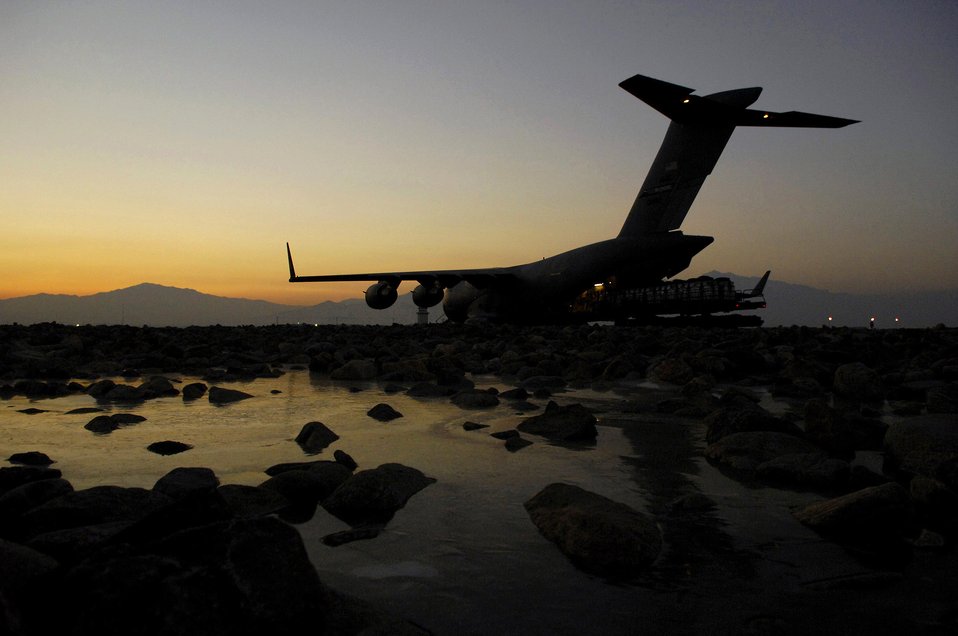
March 9 airpower summary: C-17s deliever supplies to front

A C-17 Globemaster III is loaded with bundles for a Joint Precision Airdrop Delivery System of 40 bundles of humanitarian supplies recently at Bagram Air Base, Afghanistan. C-17s and C-130 Hercules aircraft flew approximately 141 airlift sorties, delivered 700 tons of cargo and transported 3,543 passengers March 9.